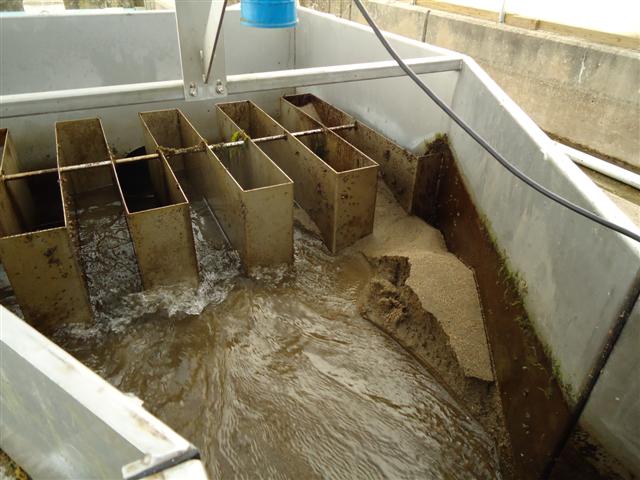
Storm damage at Eisenhower National Fish Hatchery in Vermont

Sediment in uv discharge channel.